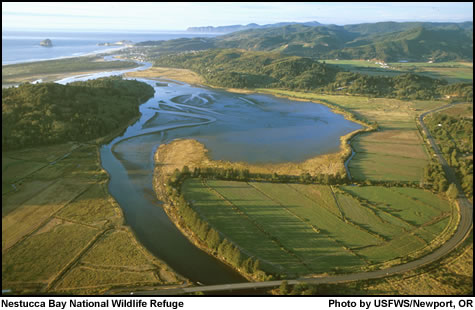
Nestucca Bay

An aerial view of Nestucca Bay National Wildlife Refuge on the Central Oregon Coast.

You are free to use this image with the following photo credit: David S. Pitkin/U.S. Fish and Wildlife Service